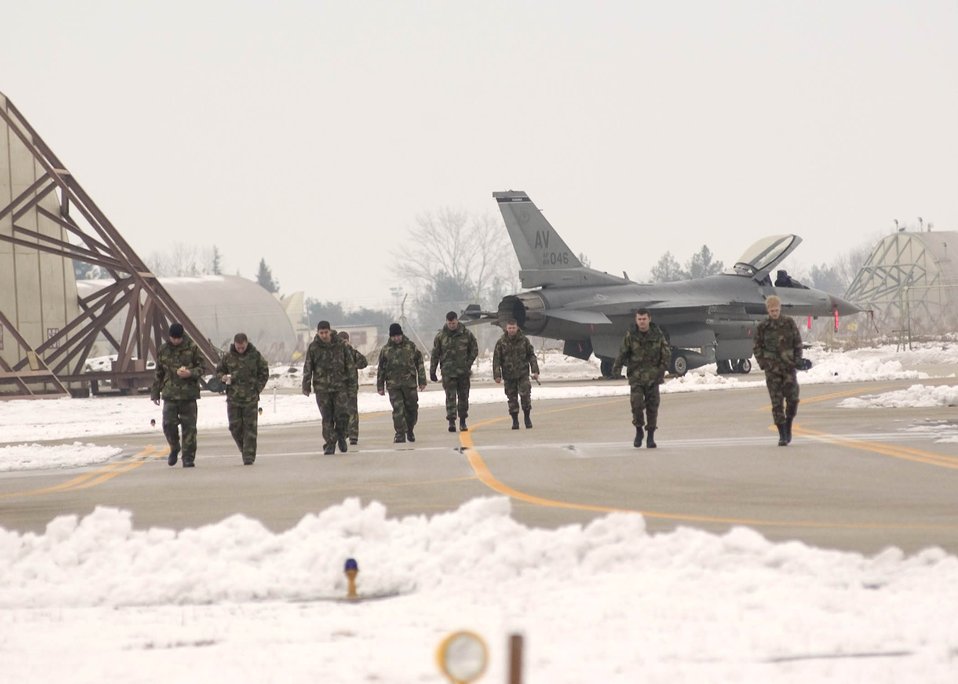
Frozen Falcons

AVIANO AIR BASE Italy -- F-16 Fighting Falcon crew chiefs look for debris on the taxiways here a couple hours before launching F-16s. Loose debris can damage jet engines. The Airmen are assigned to the 31st Aircraft Maintenance Squadron here.